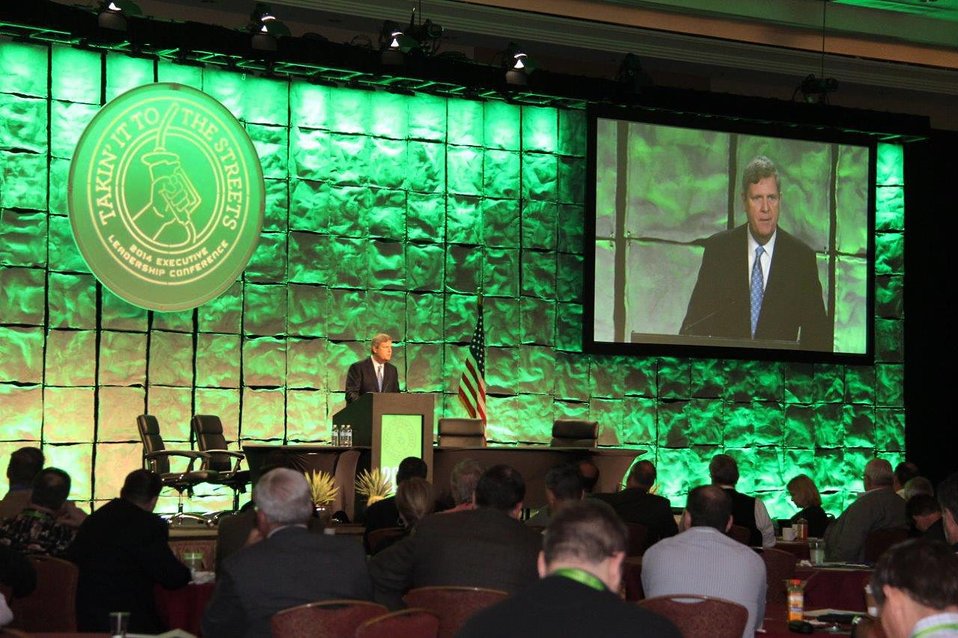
Agriculture Secretary Tom Vilsack speaks at the fifth annual executive leadership conference 'Taking it to the Streets' at the JW Marriott Desert Ridge Hotel in Phoenix, AZ on Feb. 27, 2014.